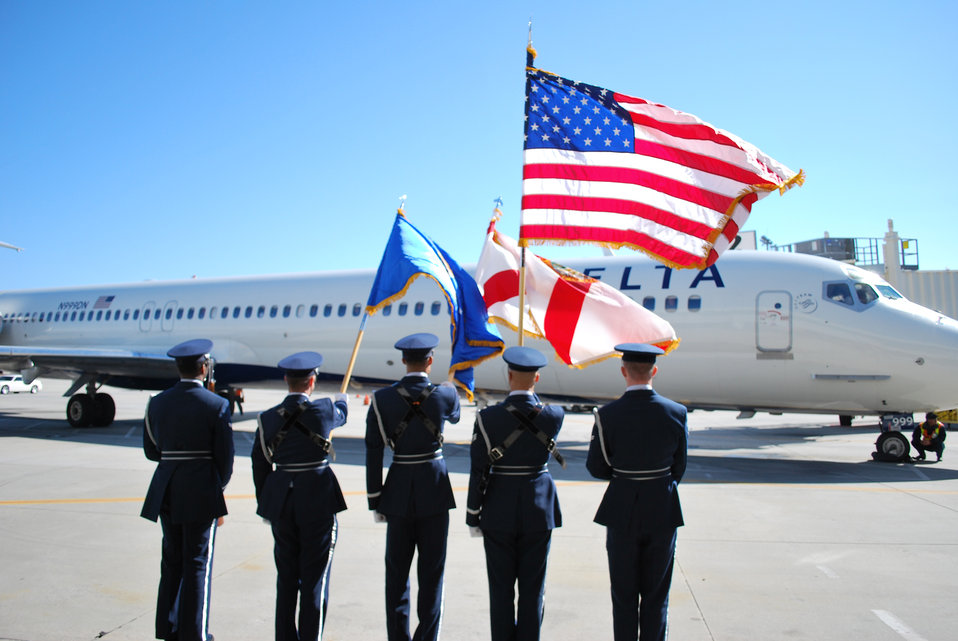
Bringing the Fallen Back Home

Airmen from the Eglin Air Force Base, Fla., Honor Guard render honors Jan. 21, 2011, as the plane carrying the remains of 1st Lt. Robert Franklin Dees arrives at the Pensacola Regional Airport, Fla. Lieutenant Dees was missing since the Korean War and was being returned home to Ozark, Ala., for burial.